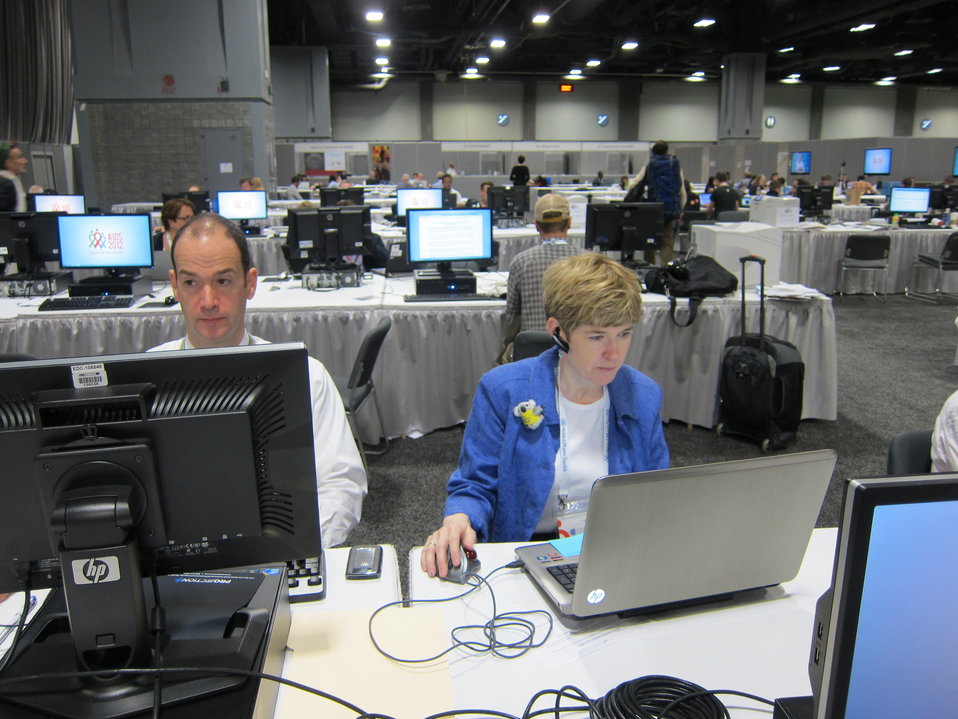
Media Centre